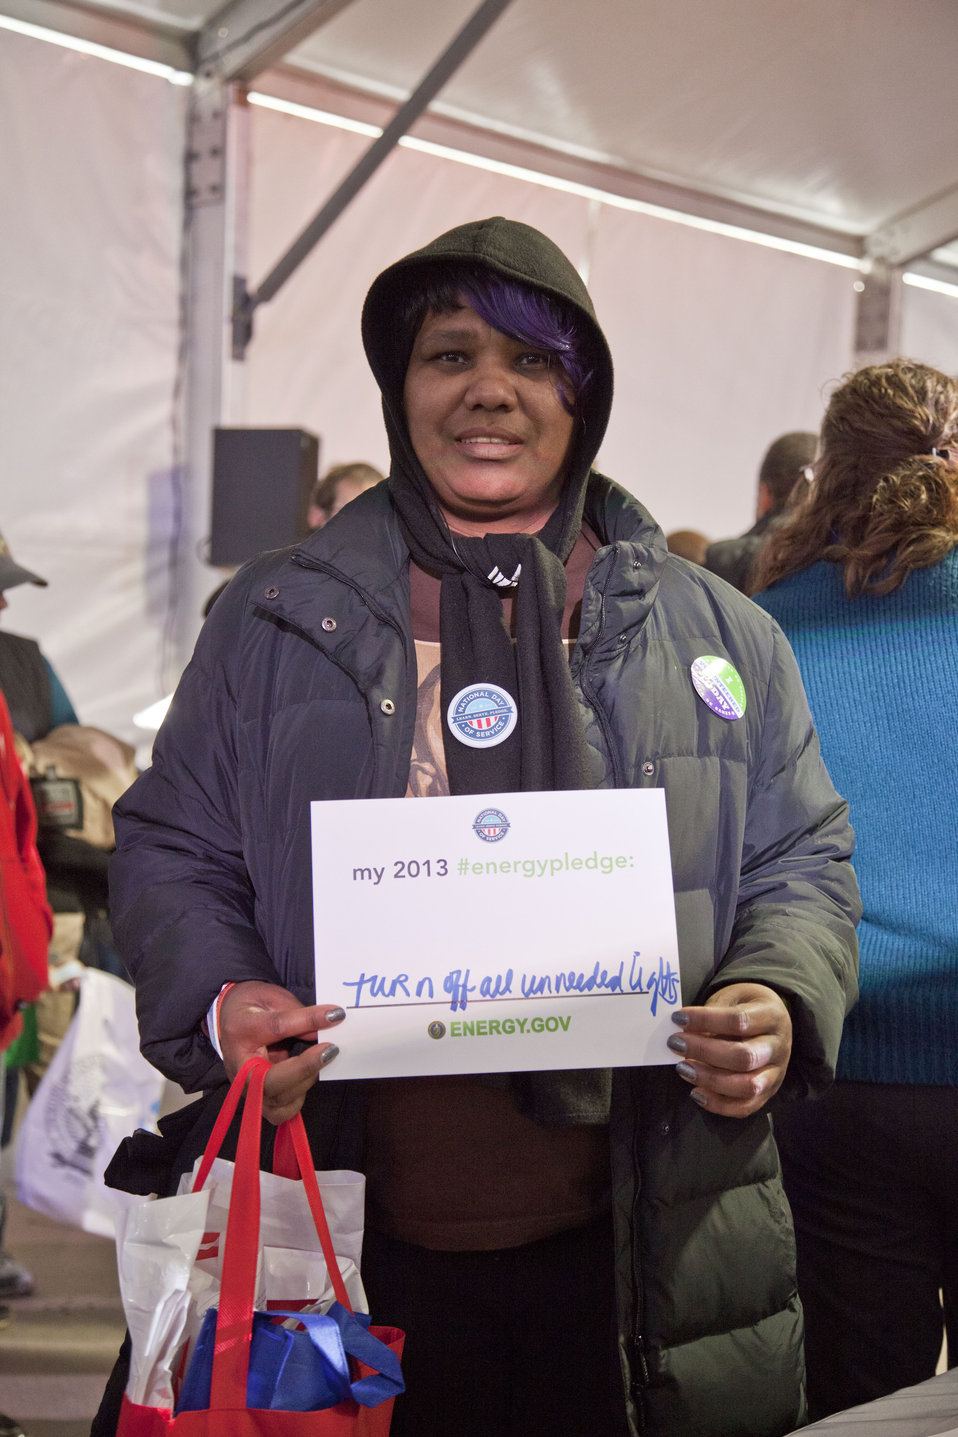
What's your #energypledge?